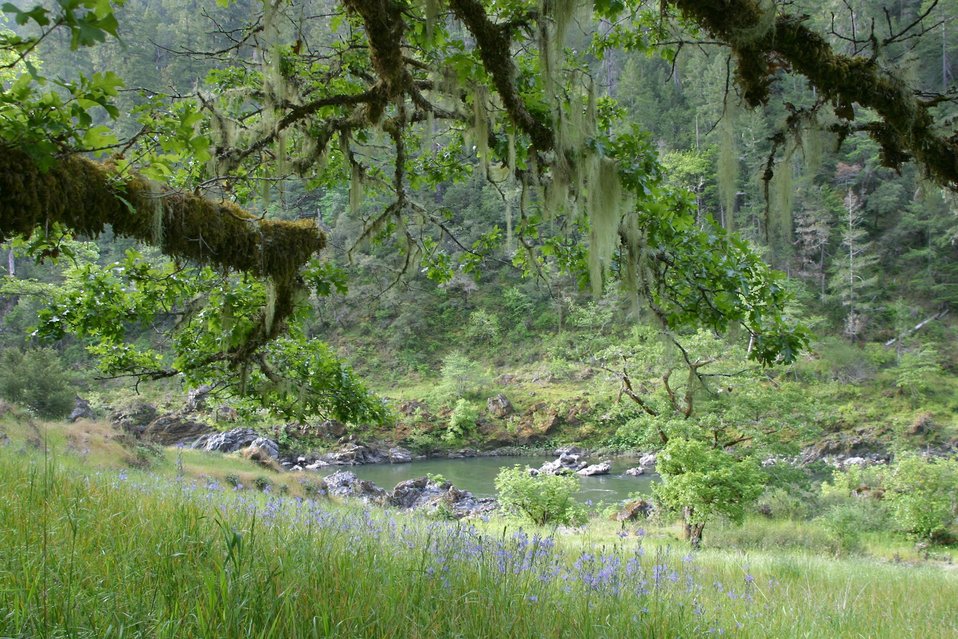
Wild section of the Rogue River from Grave Creek to Foster Bar May 19 to May 22.